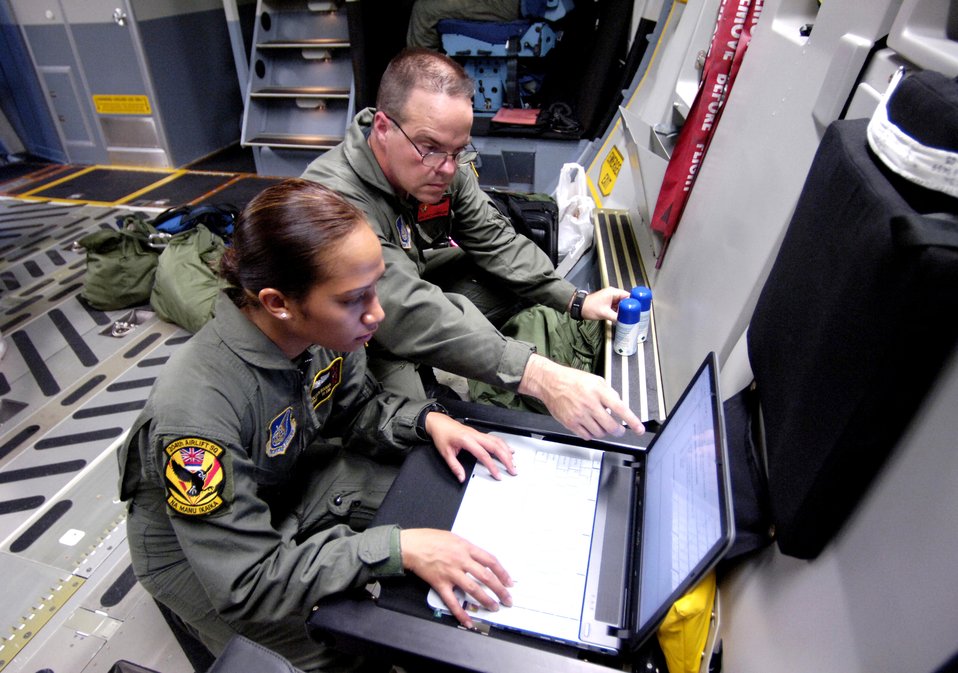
Loadmasters help reposition Australian Defense Forces

Staff Sgt. Joleen Manuia and Master Sgt. Mike Cumberland review publications before departing from Hickam Air Force Base, Hawaii, on Thursday, May 25, 2006. Sergeant Manuia is with the Hawaii Air National Guard's 204th Airlift Squadron. Sergeant Cumberland is with the 535th AS at Hickam. Both are C-17 Globemaster III loadmasters. They are two of the Air Force crew members helping move equipment and troops from the Solomon Islands to Australia, repositioning Australian Defense Forces to support peace operations in East Timor.